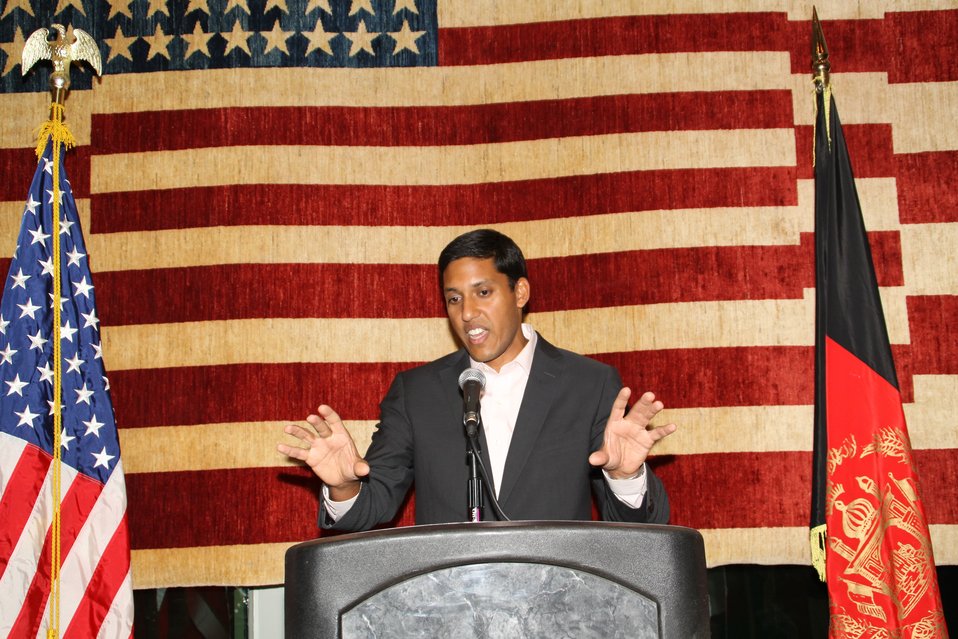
US Embassy Town Hall July 21, 2010